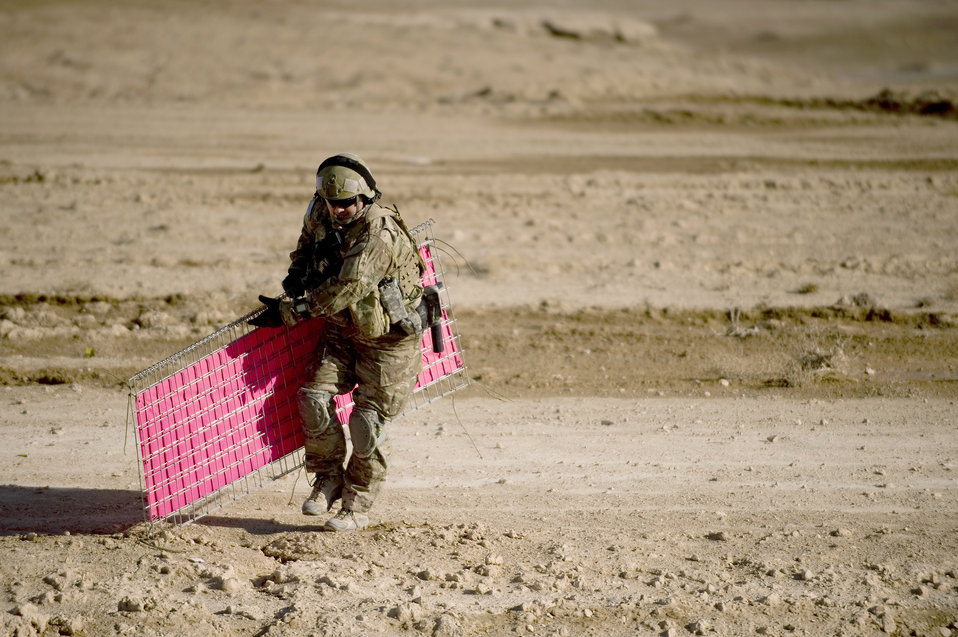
Last frontier for tactical air control

Tech. Sgt. Jason Rutledge tears down airfield panels on a dirt landing zone Feb. 16, 2011, at Forward Operating Base Lagman, Afghanistan. The panels were set up to show a C-130 Hercules aircrew where they should land. Sergeant Rutledge was there to make sure the dirt landing zone was safe for aircraft to land. Sergeant Rutledge is a joint terminal attack controller assigned to the 807th Expeditionary Air Support Operations Squadron.